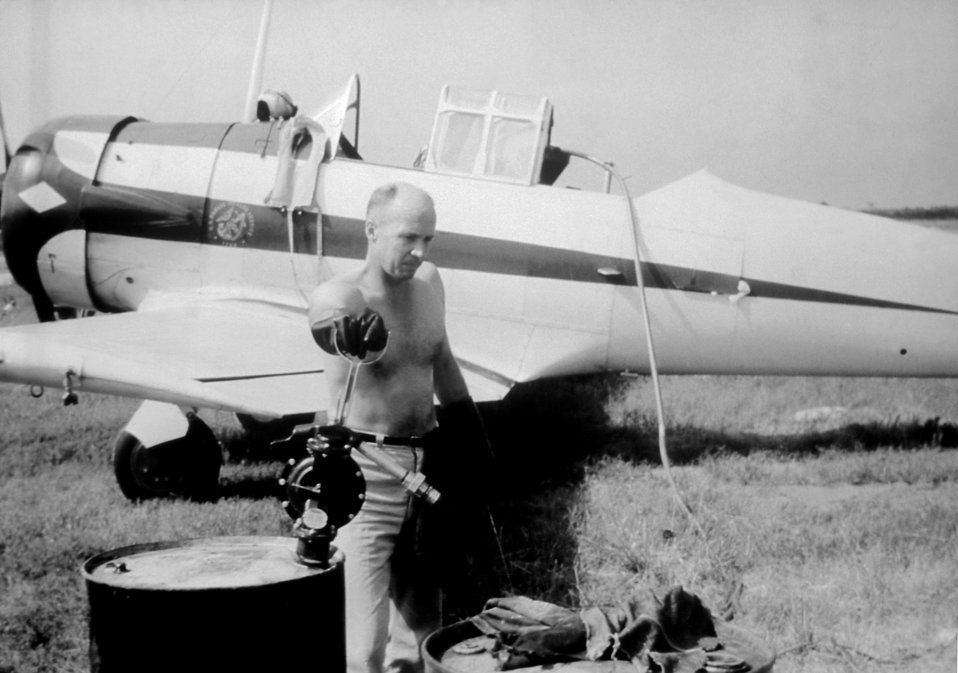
A 1955 photograph of a Mosquito Control plane and pilot in North Carolina.